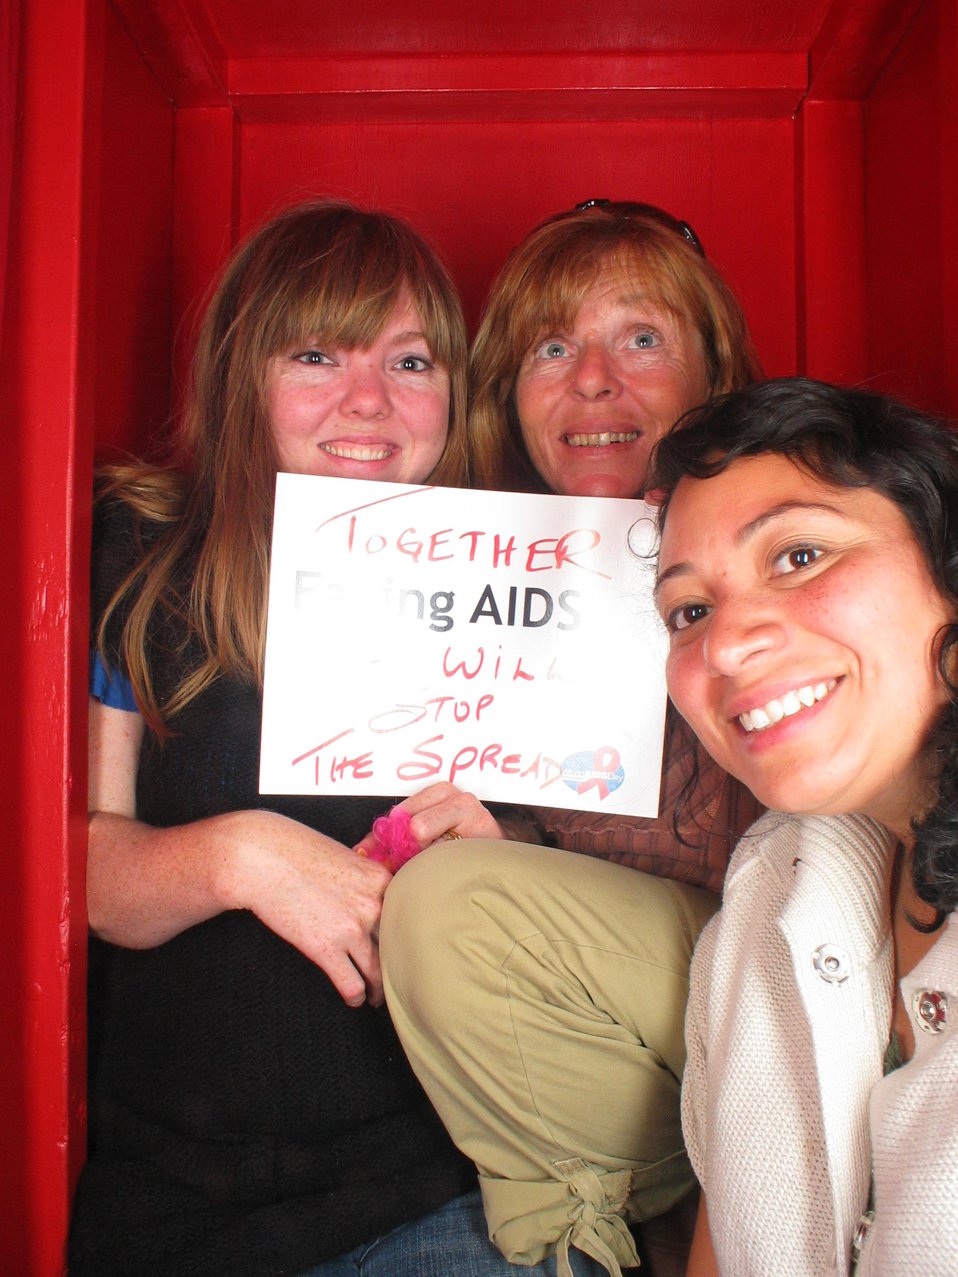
Together Facing AIDS will stop the spread.